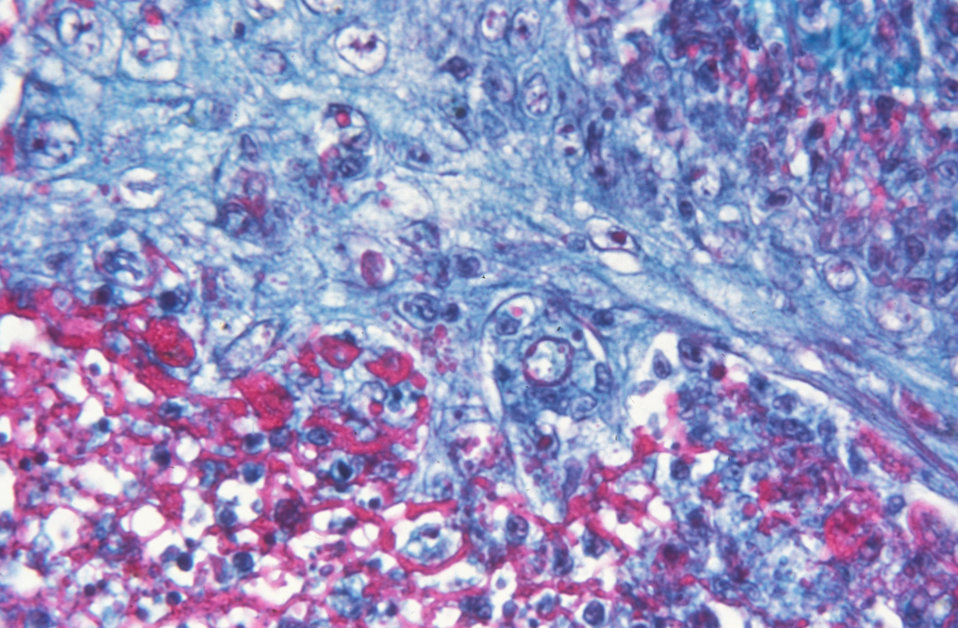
This micrograph reveals the histologic changes in human skin that has been infected with the smallpox variola virus.